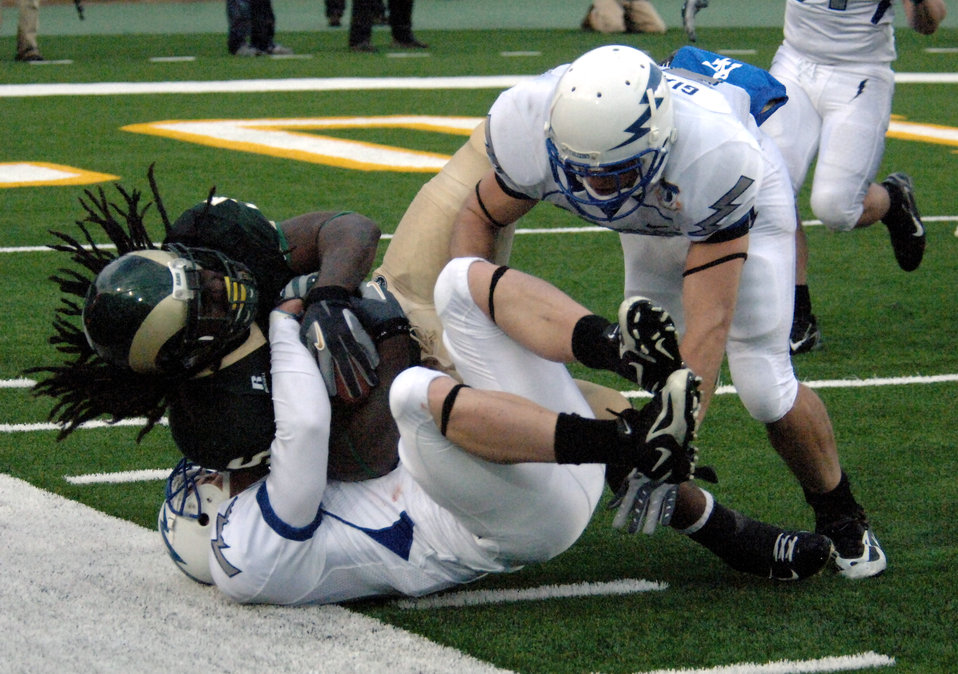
Football: Falcons, Hall run roughshod over CSU

Falcon cornerback Carson Bird wraps up Colorado State running back Gartrell Johnson as safety Bobby Giannini close in during Air Force's 45-21 victory over the Rams Oct. 13 in Fort Collins, Colo. The two senior secondary veterans combined for 13 tackles, including nine solos.